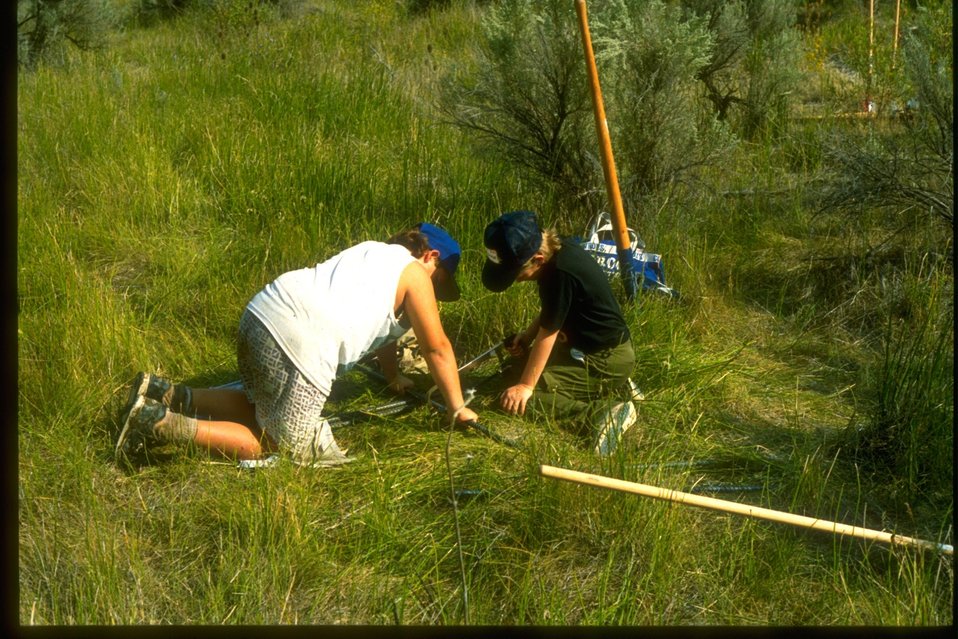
Riparian planting along Bridge Creek on Volunteer Day.